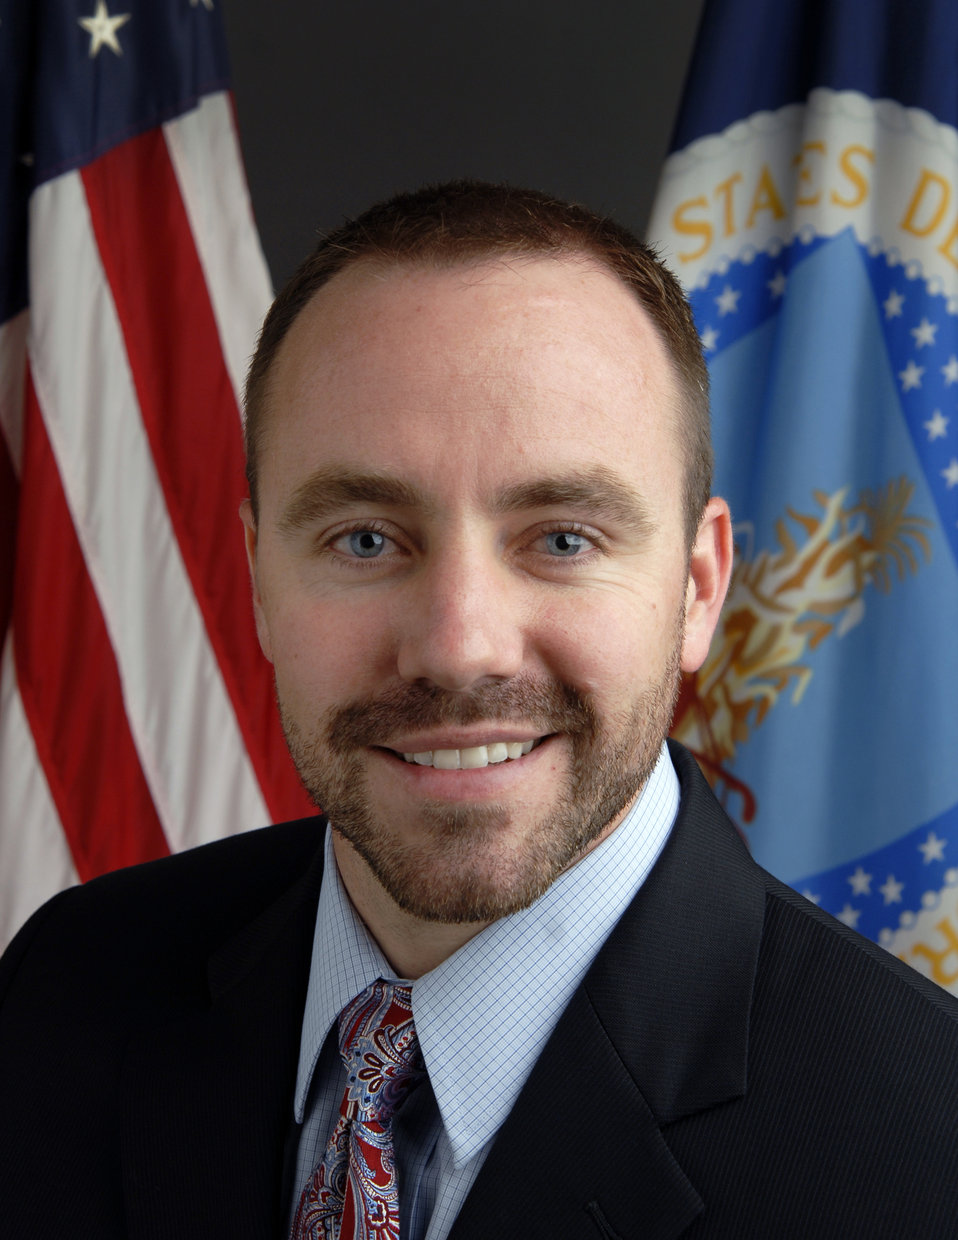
20120823-APHIS-KJH APHIS Director, Business Systems Management, Todd E. Schroeder

Portrait Todd E. Schroeder, Director, Business Systems Management, APHIS.